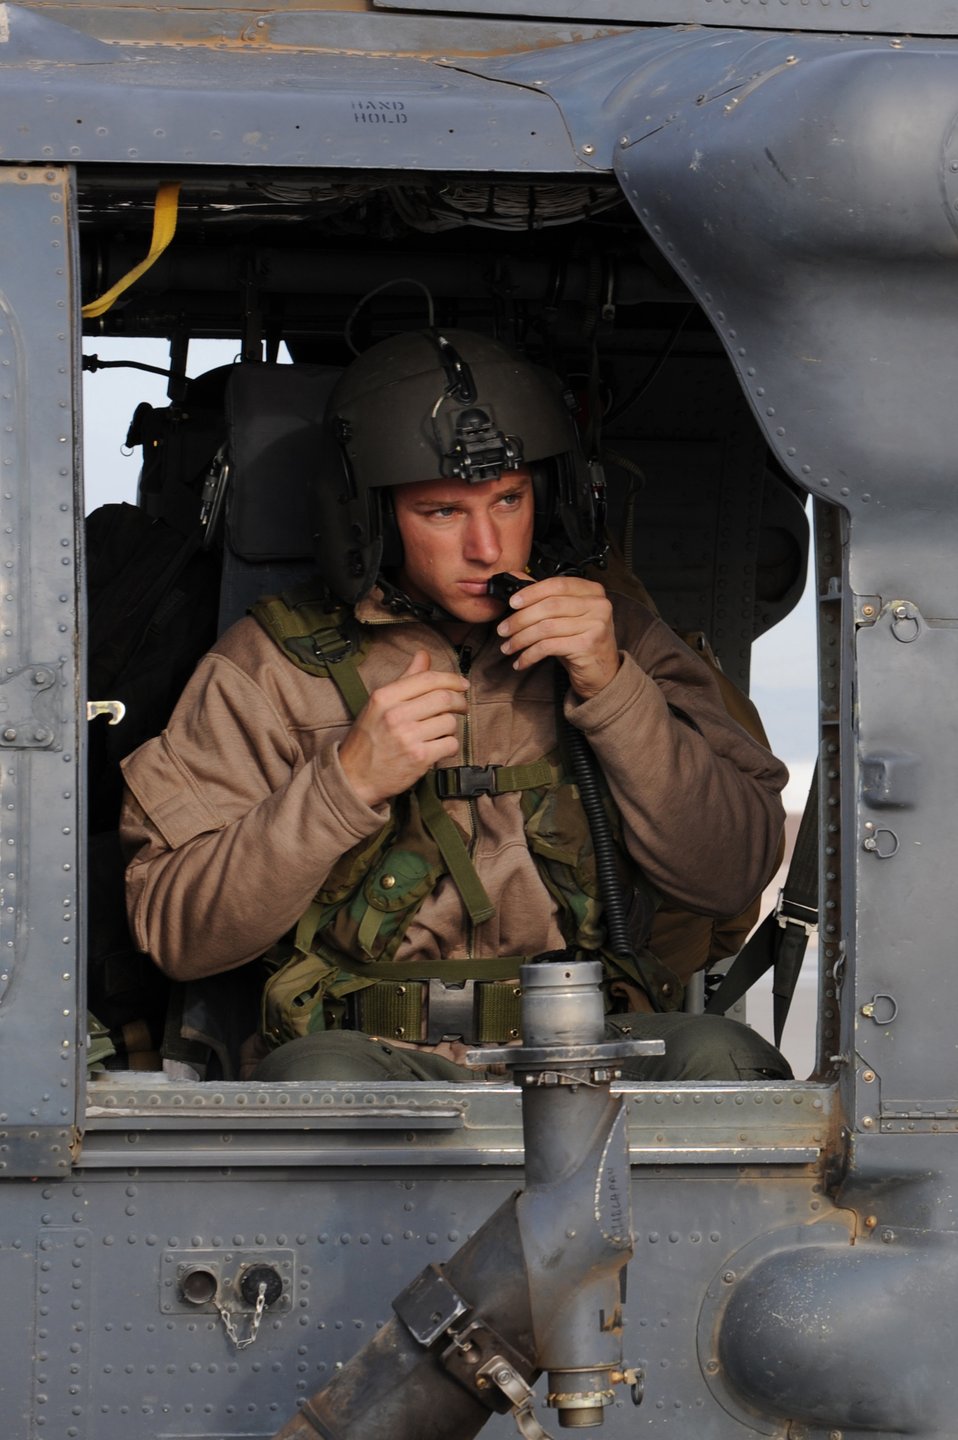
Nellis Airmen locate missing aircraft

Staff Sgt. Johann Schultz makes final adjustments to his helmet prior to departing for a rescue mission May 1 at Nellis Air Force Base, Nev. Four helicopters and 24 Airmen from the 58th and 66th Rescue Squadrons deployed to assist in the search for a pilot and passenger who were aboard a motorized sailplane that disappeared from radar April 24 in the Sierra Nevada Mountain Range near Mammoth Lakes, Calif. Sergeant Schultz is an an HH-60G aerial gunner with the 66th Rescue Squadron.